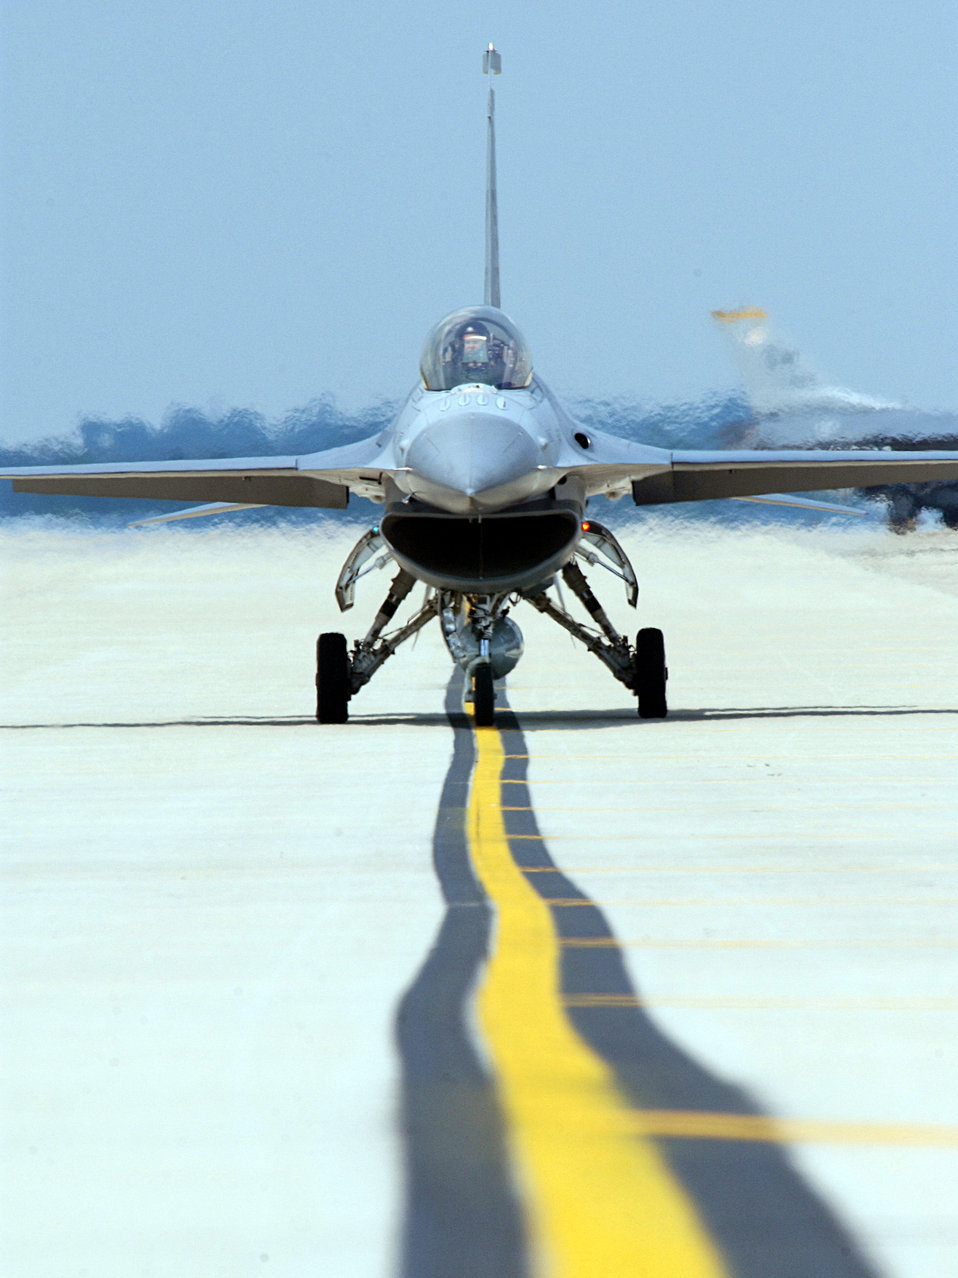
New upgrades

SHAW AIR FORCE BASE, S.C. -- An F-16 aircraft returns here from Hill Air Force Base, Utah, May 8. A new system called the Common Configuration Implementation Program was recently installed in the aircraft upgrading it to the 21st century-level. The aircraft belongs to the 55th Fighter Squadron.